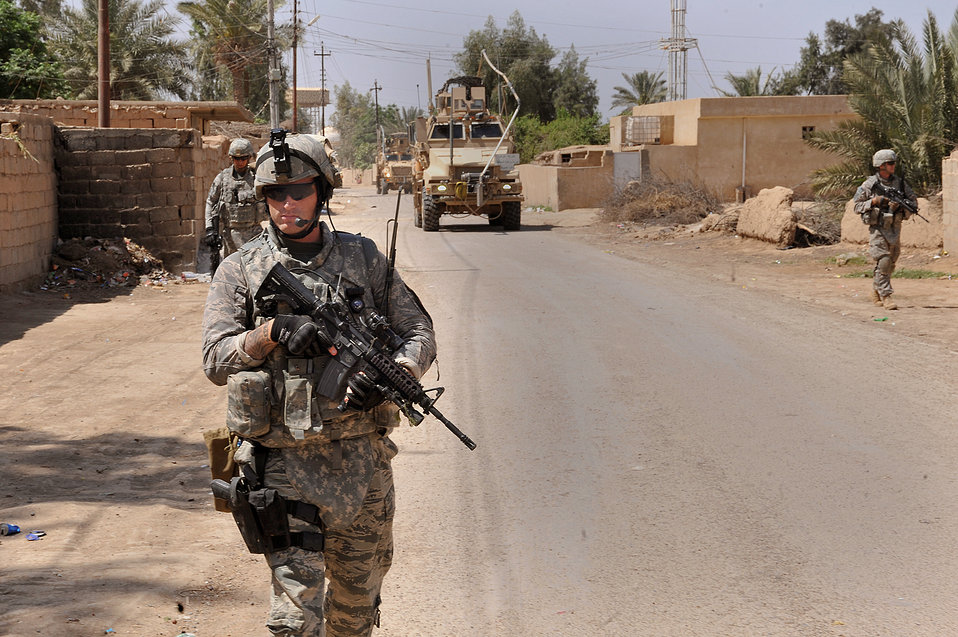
Airmen, Soldiers perform patrol

Staff Sgt. Benjamin Wilson patrols a village April 14, 2010, on the outskirts of Joint Base Balad, Iraq. The patrol is a joint effort between U.S. Army and Air Force members looking for a weapons cache. Sergeant Wilson is from the 532nd Expeditionary Security Forces Squadron, deployed from Vandenberg Air Force Base, Calif.